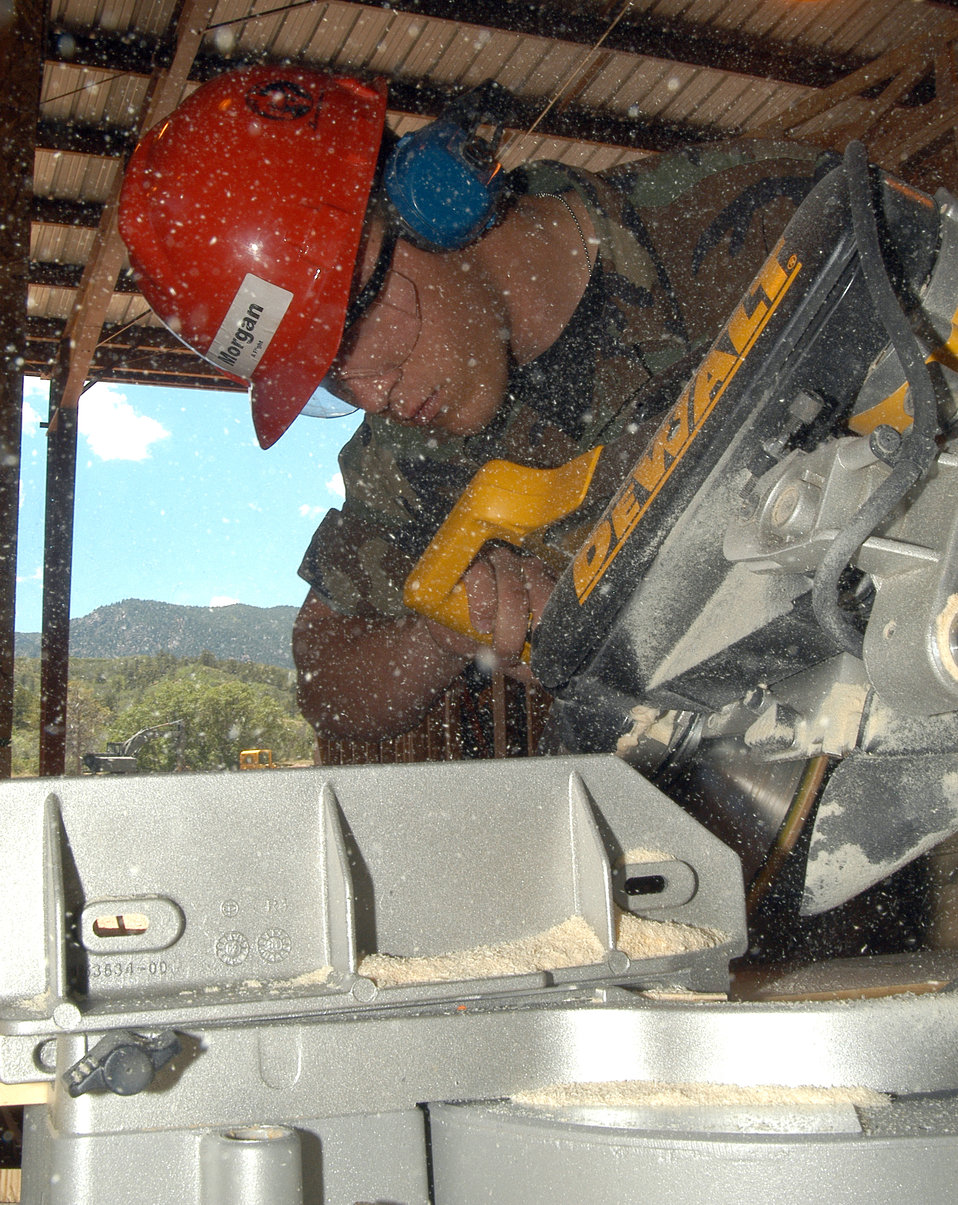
Cadets get 'constructive'

U.S. AIR FORCE ACADEMY, Colo. -- Cadet Brad Condell fills the air with sawdust as he cuts wood used to frame a hogan, a traditional Navajo home. Each summer, cadets in the field engineering readiness laboratory here build the shelters to learn civil engineering from Air Force craftsmen. Once the homes are completed, they are donated to Southwestern Navajo tribes.